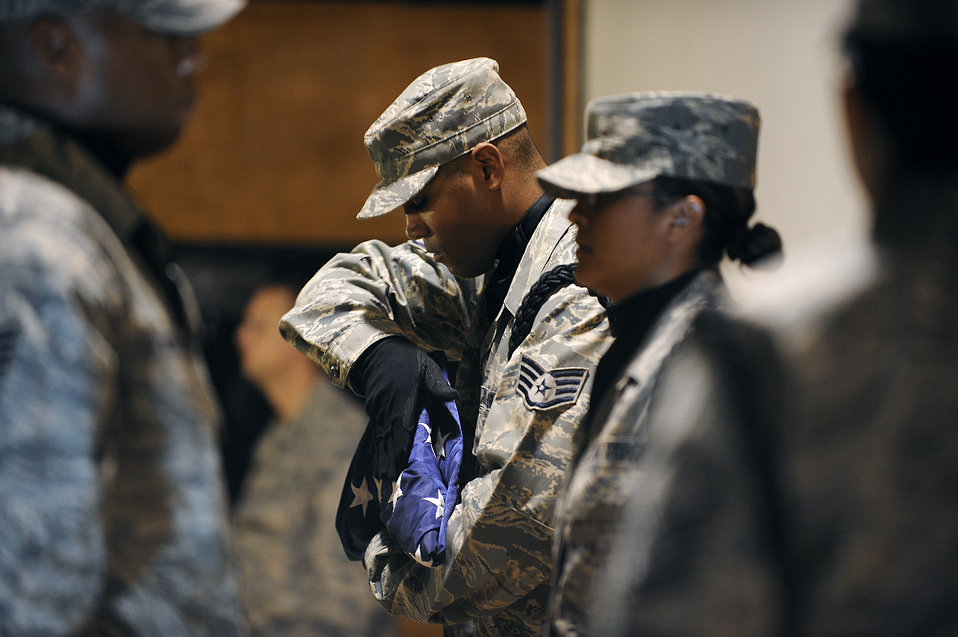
Joint Base Balad Airmen remember fallen wingman

Staff Sgt. Wade Woods folds a flag during a memorial service held in Staff Sgt. Brain Hause's honor Oct. 27 at Joint Base Balad, Iraq. Sergeant Hause received an Air Force Commendation Medal and Iraq Campaign Medal posthumously for his contributions while deployed here from Shaw Air Force Base, S.C. Sergeant Woods, a member of the Joint Base Balad honor guard, is deployed to the 332nd Expeditionary Logistics Readiness Squadron from Keesler AFB, Miss.